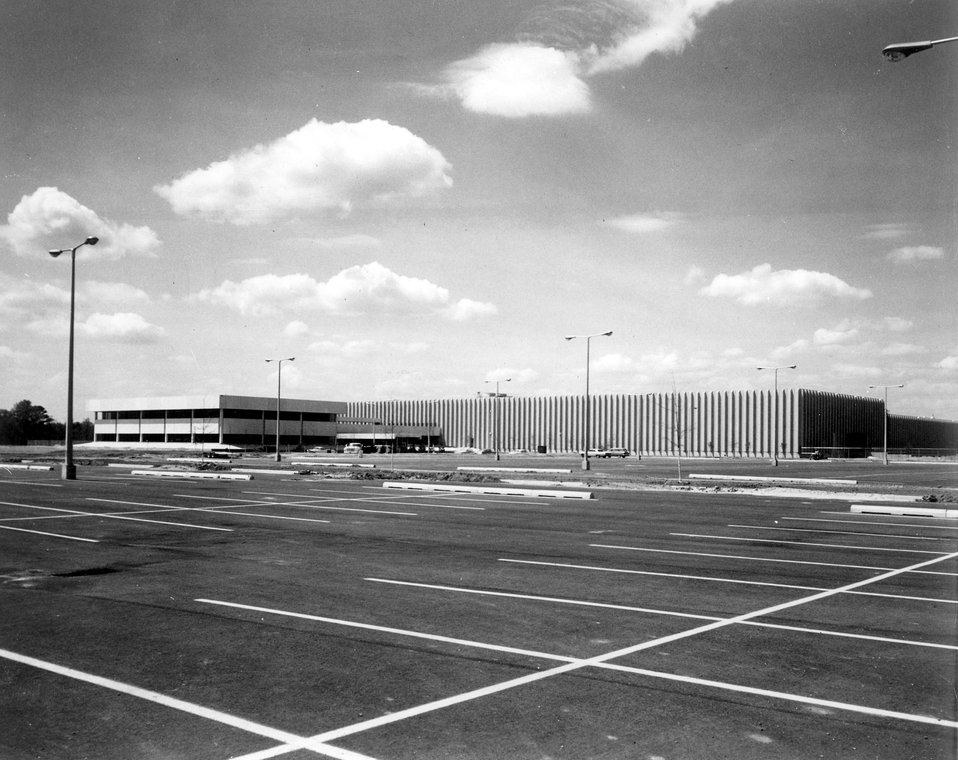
Westinghouse Electric Corporation's new uranium fuel fabrication plant. c. 1970